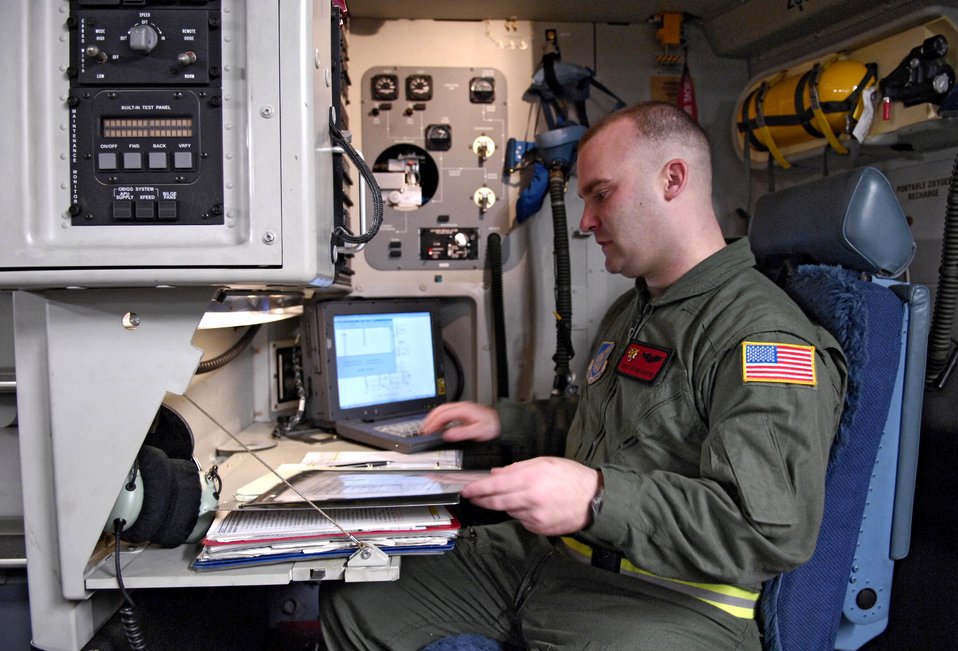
C-17 delivers strategic capability

Staff Sgt. Jason Scaffidi looks over logbooks before departing for a mission Jan. 25 from Hickam Air Force Base, Hawaii. Sergeant Scaffidi is a loadmaster with the 535th Airlift Squadron. The C-17 Globemaster III is capable of rapid strategic delivery of troops and all types of cargo to main operating bases or directly to forward bases in the deployment area.